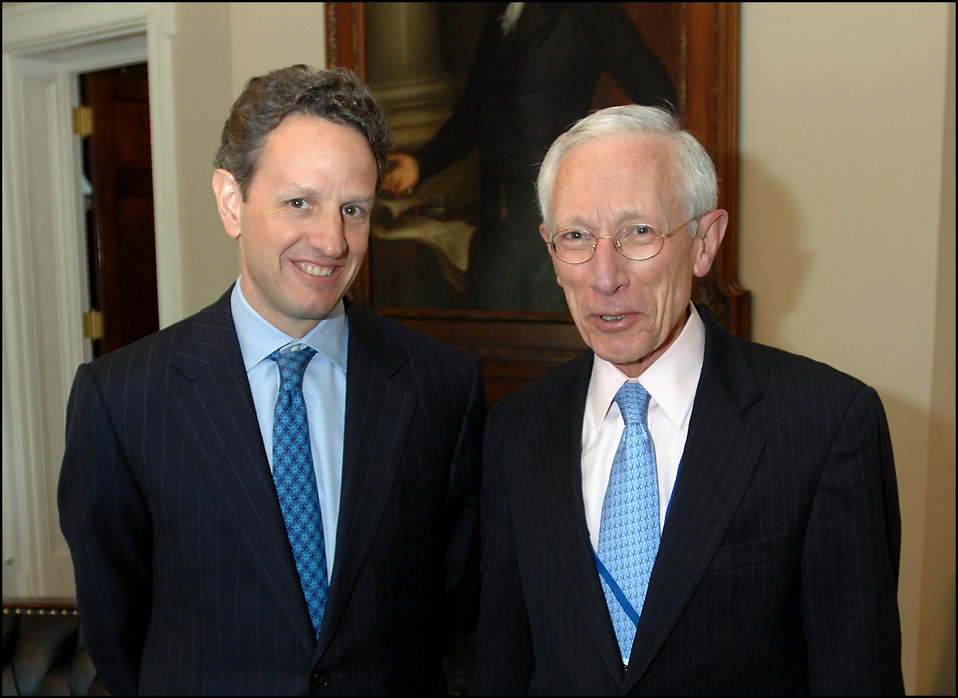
Israeli Central Bank Governor Fischer

On April 24, 2009, Secretary Geithner conducted bilateral meetings at Treasury with Israeli Central Bank Governor Fischer.